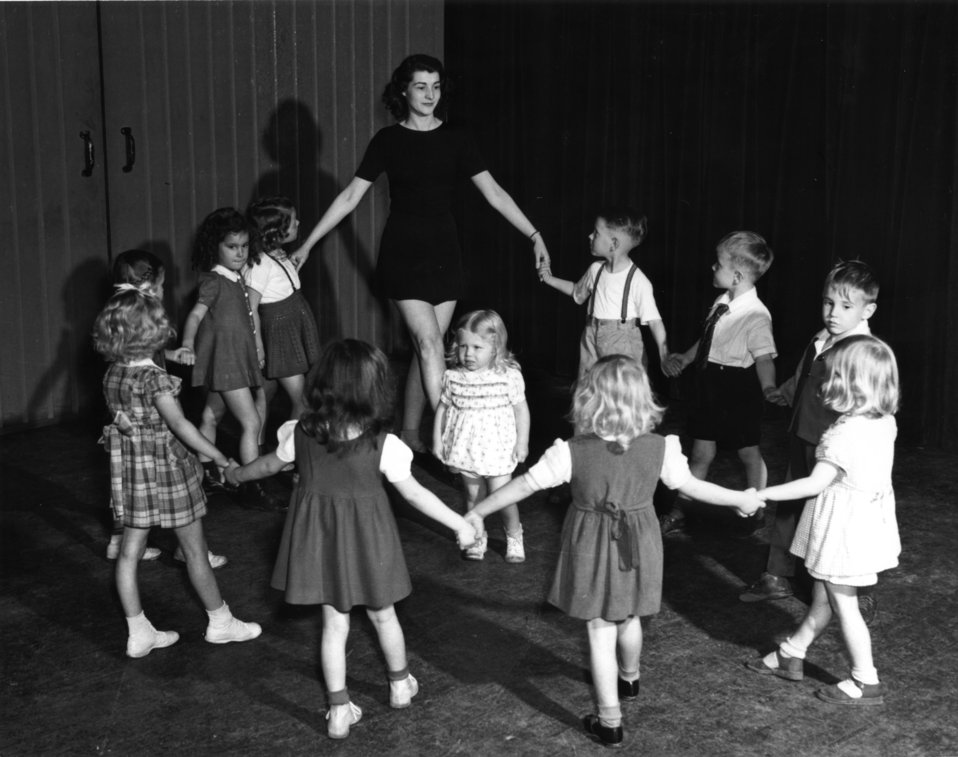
Recreation at Oak Ridge